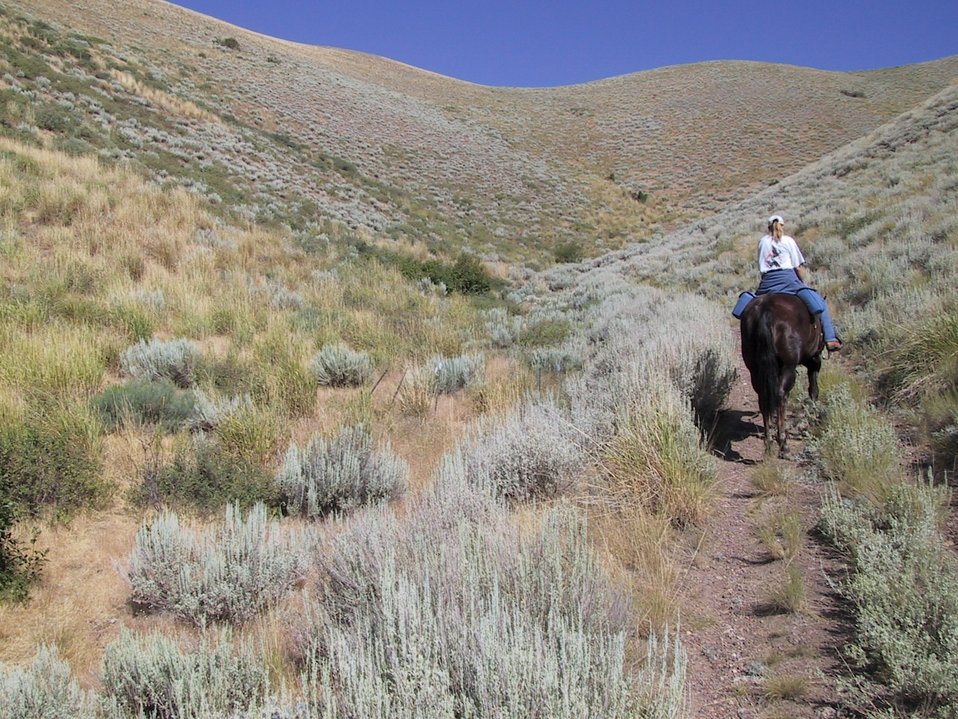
Horseback riding Shoshone Field Office USRD Upper Snake River District